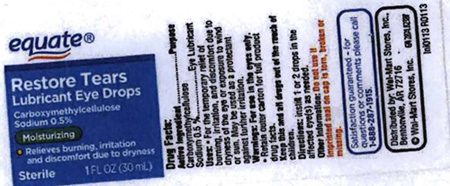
RECALLED – Lubricant Eye Drops, Carboxymethylcellulose Sodium 0.5% Ophthalmic Solution

September 6, 2013 – Product Recall – Altaire Pharmaceuticals, Inc. Issues Voluntary Nationwide Recall of 9 Lots of Carboxymethylcellulose Sodium 0.5% Ophthalmic Solution Sold Under Several Brands Because the Preservative May Not Be Effective Through Expiry.